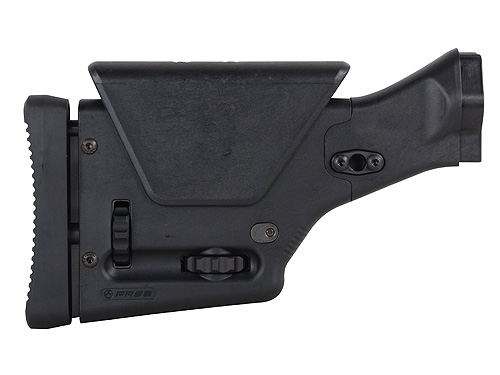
Picture of the stock on my 100 BA rifle.